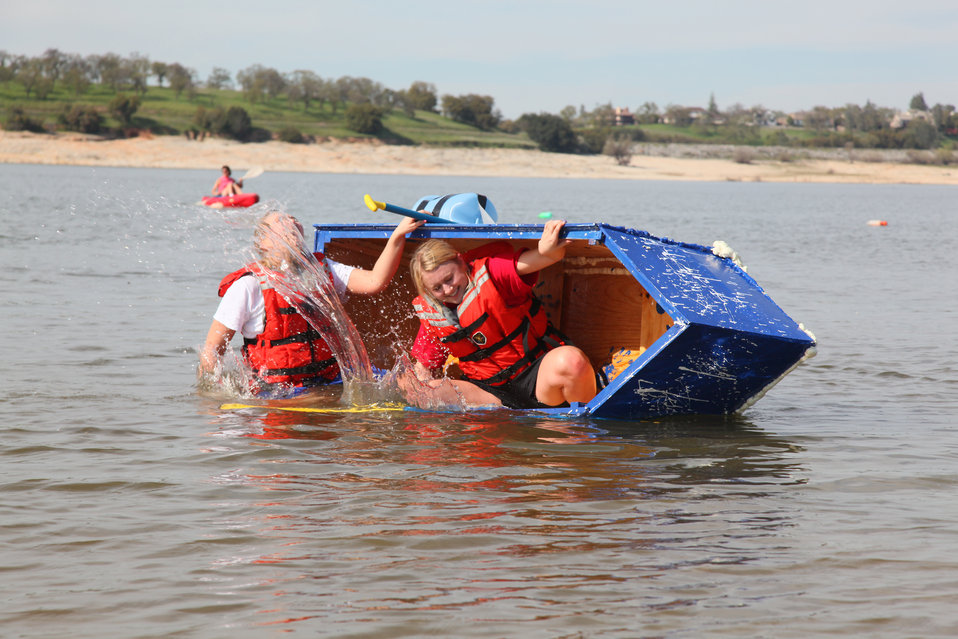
Judging Folsom High School's Cardboard/Plywood/Whatever Regatta

Folsom, Calif. (April 4, 2011) -- Student competitors take a spill during Folsom High School’s Fourth Annual Cardboard/Plywood/Whatever Regatta at Beal’s Point State Park here April 1. Students from more than 20 physics and engineering classes at Folsom and Rancho Cordova High Schools competed to design and build boats, which were judged against design and performance criteria. Two U.S. Army Corps of Engineers Sacramento District engineers were volunteer judges for the competition.